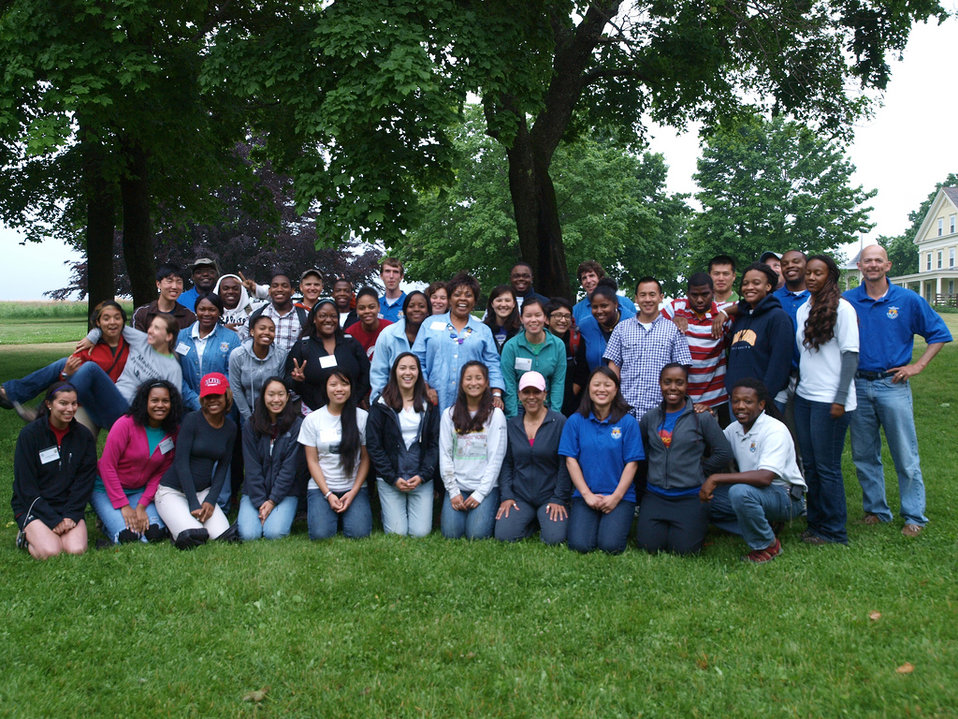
Group shot of the 2010 CIP crew

U.S. Fish and Wildlife Service